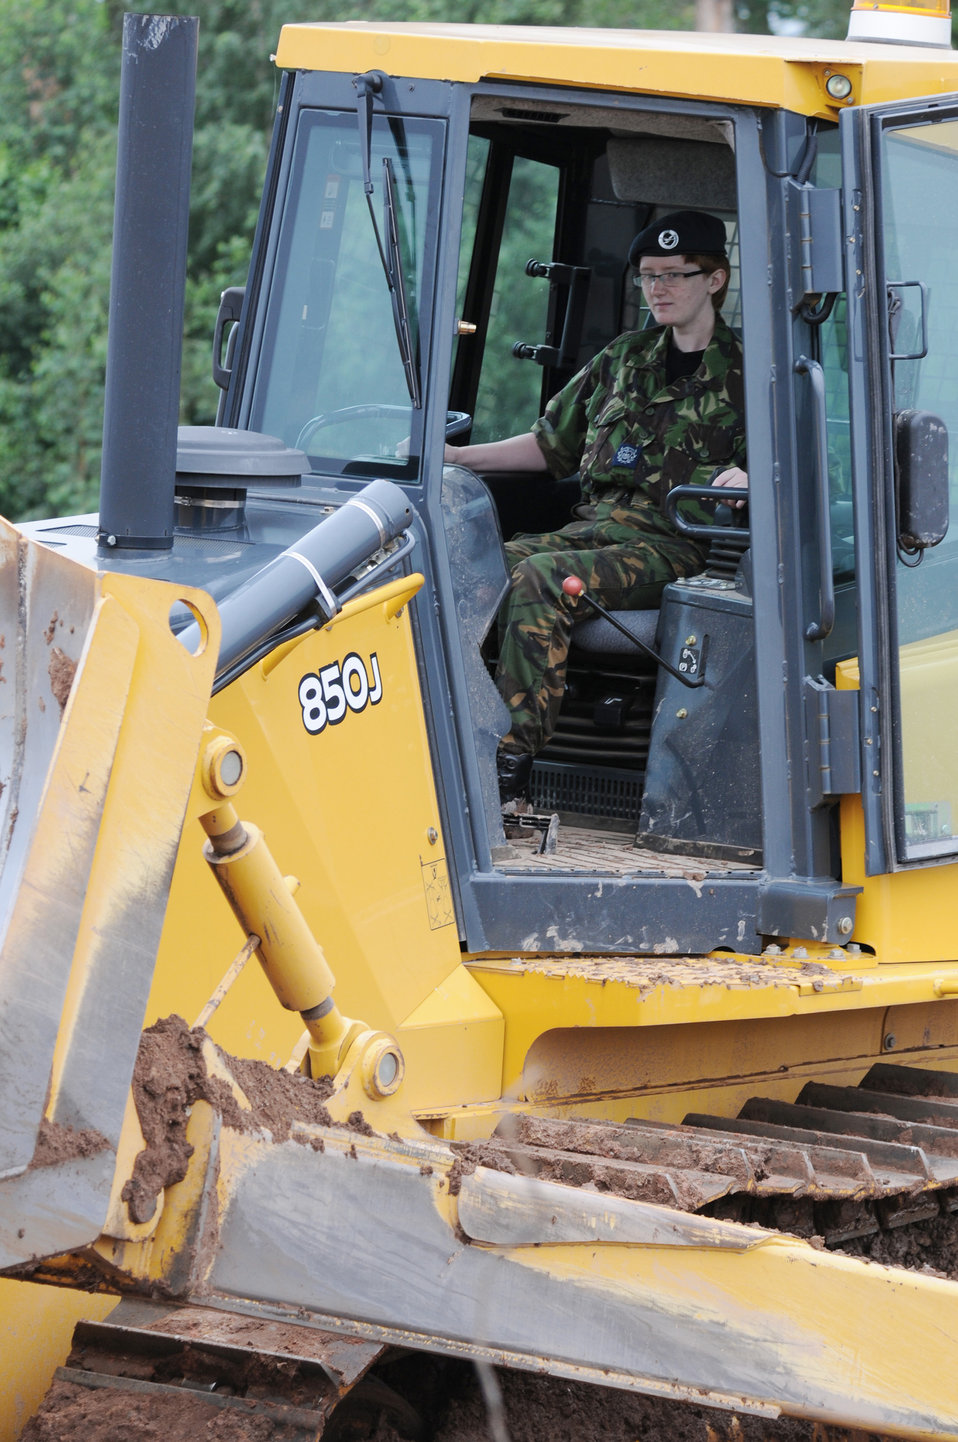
British cadets nurture 'spirit of adventure' at Ramstein

Royal Air Force Air Cadet Sgt. Louise Penman operates a bulldozer during a July 14 visit to Ramstein Air Base, Germany. RAF cadets visited Ramstein AB for a week of leadership development and contingency skills training.